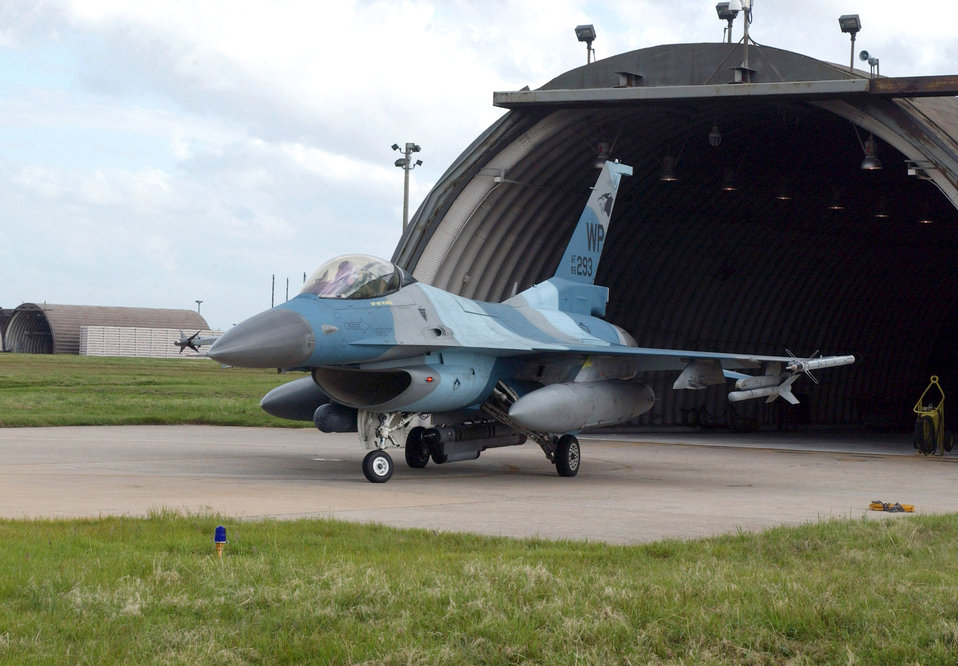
Reaching a milestone

Lt. Col. Mark Kling brings his F-16 Fighting Falcon to a halt Sept. 20 at Kunsan Air Base, South Korea, after reaching the 2,000-flight hour mark. Colonel Kling is the 8th Operations Group deputy commander.